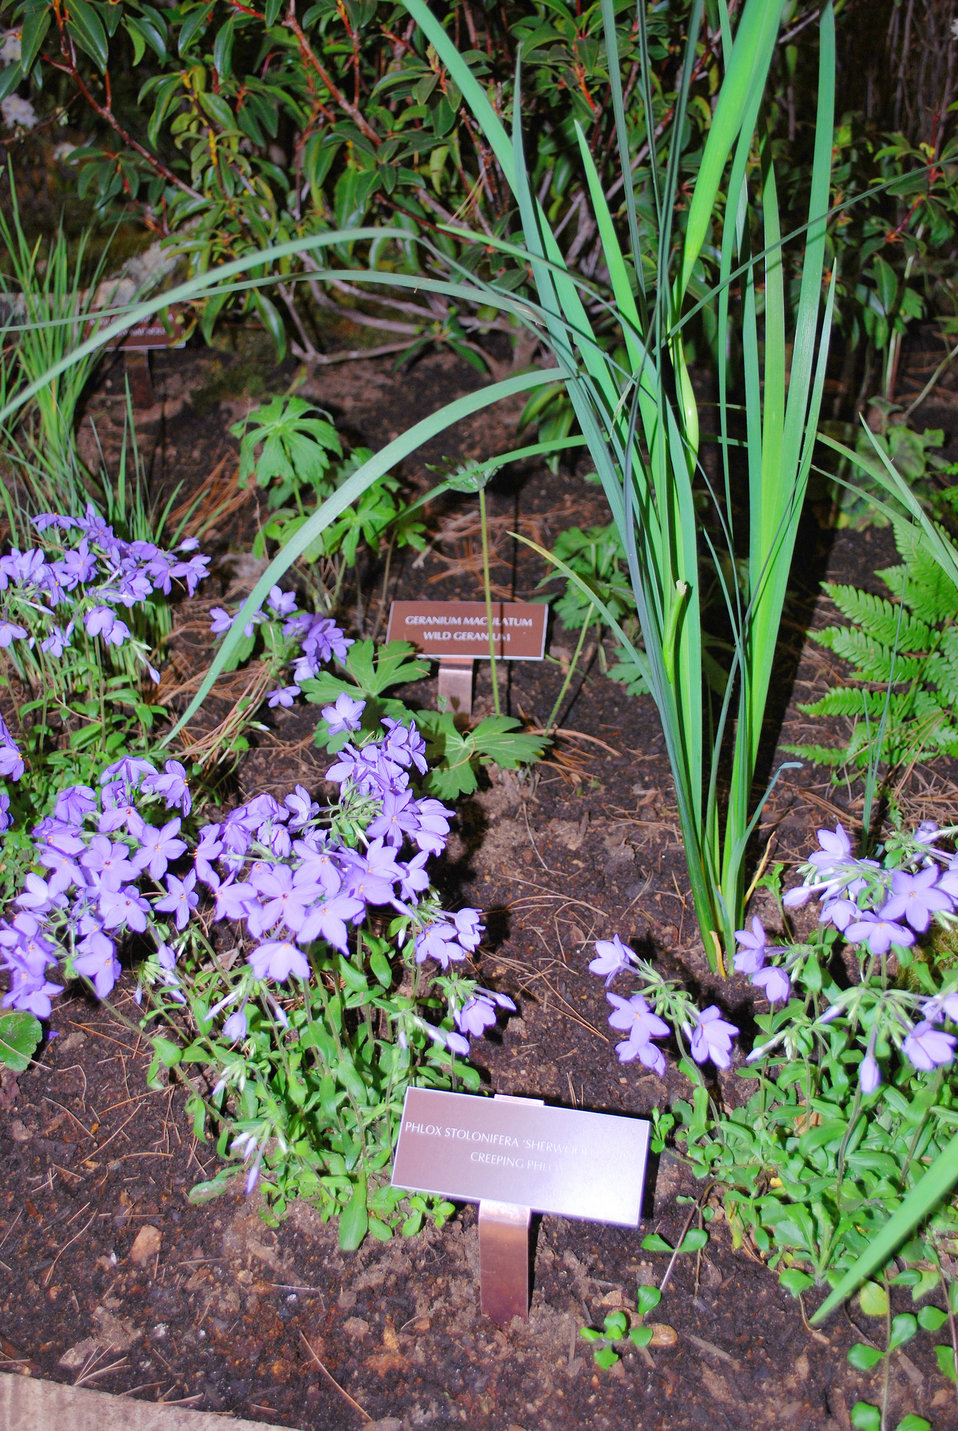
March 4, 2013 - Mid-Atlantic Region, Native Plant: Purple Phlox

Stunning when they flower, these purple phlox were part of the EPA exhibit at the 2013 Philadelphia Flower Show. The exhibit introduced visitors to the beauty of native plants and how native plants might be used in their own landscapes.

View the full list of the flowers found at the EPA display

More EPA resources, species photos, and information about the 2013 Flower Show